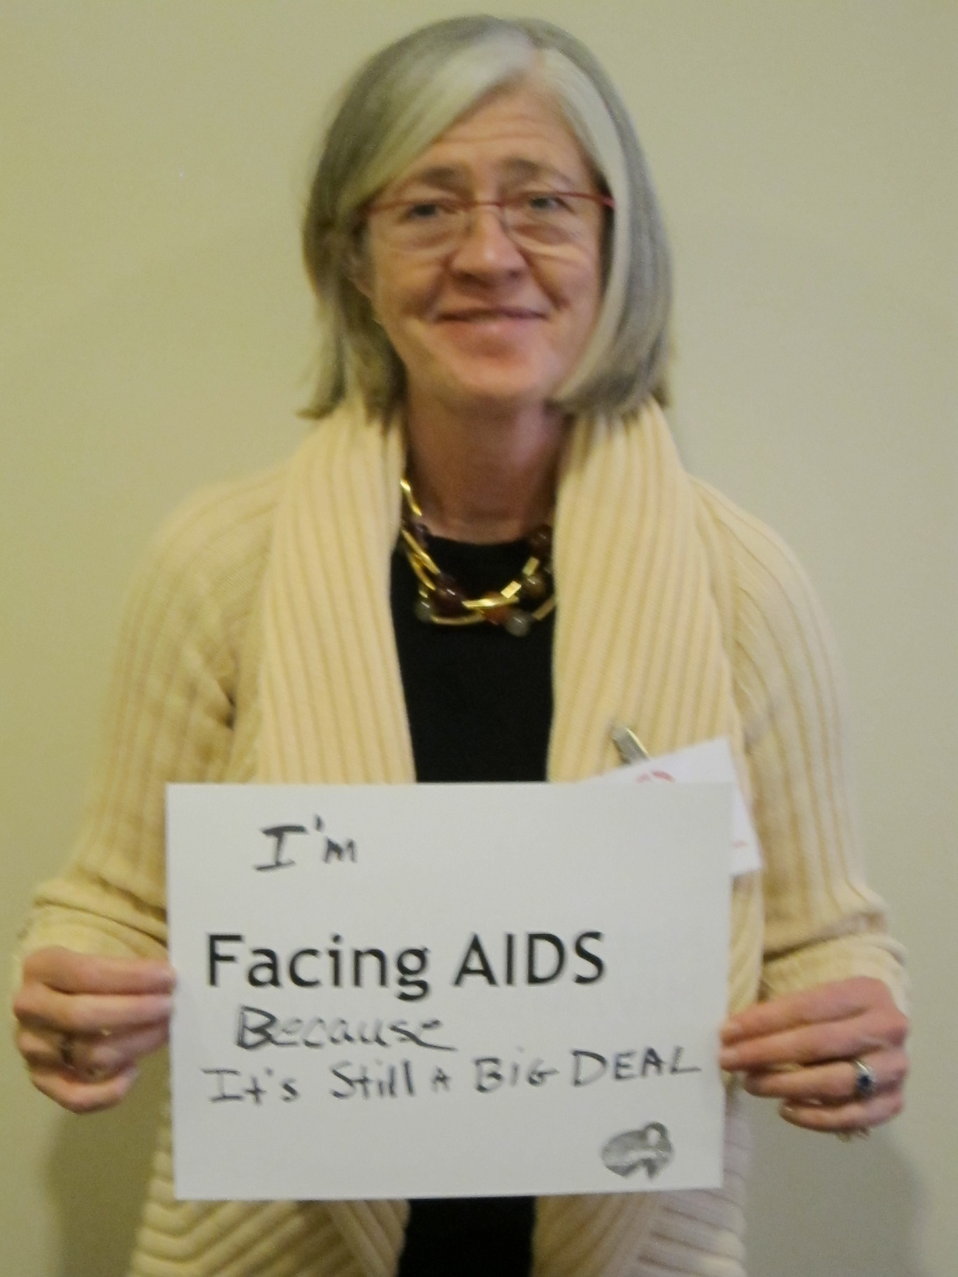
I'm Facing AIDS because it's still a big deal